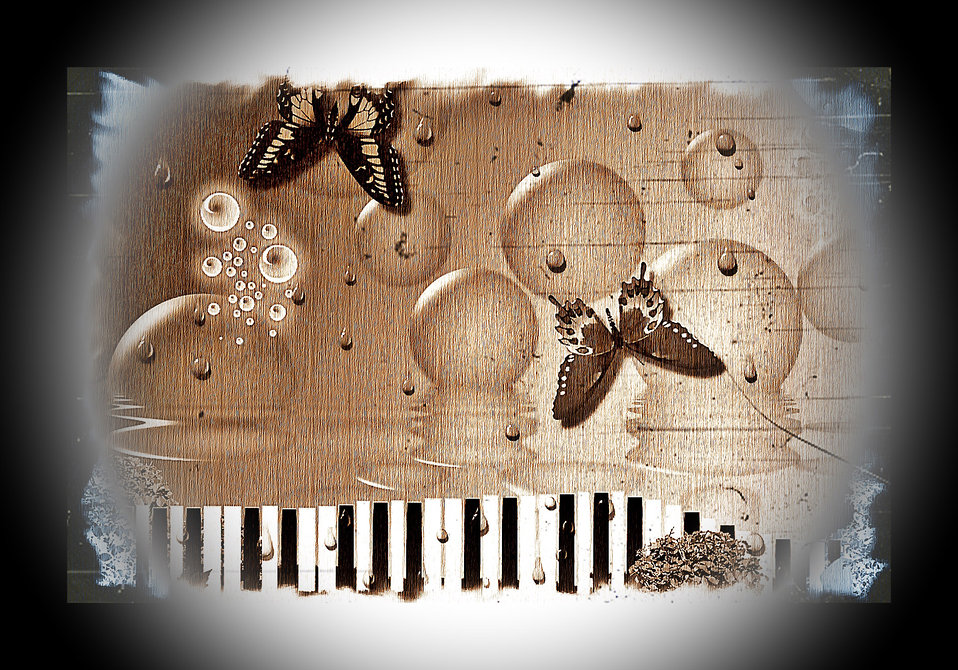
Nature music

Background.